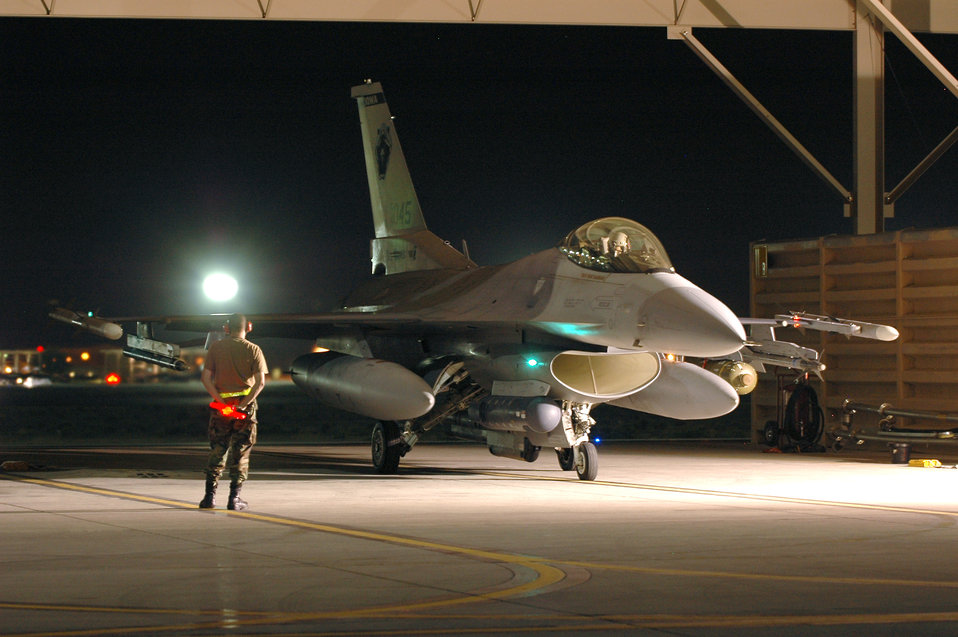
Red Flag

Tech. Sgt. Mike Johanns waits to marshal an F-16 Fighting Falcon during Red Flag 06-02 at Nellis Air Force Base, Nev., on Aug. 15. U.S. and coalition servicemembers are participating in the exercise that concludes today. Sergeant Johanns is a crew chief with the Iowa Air National Guard's 132nd Fighter Wing.